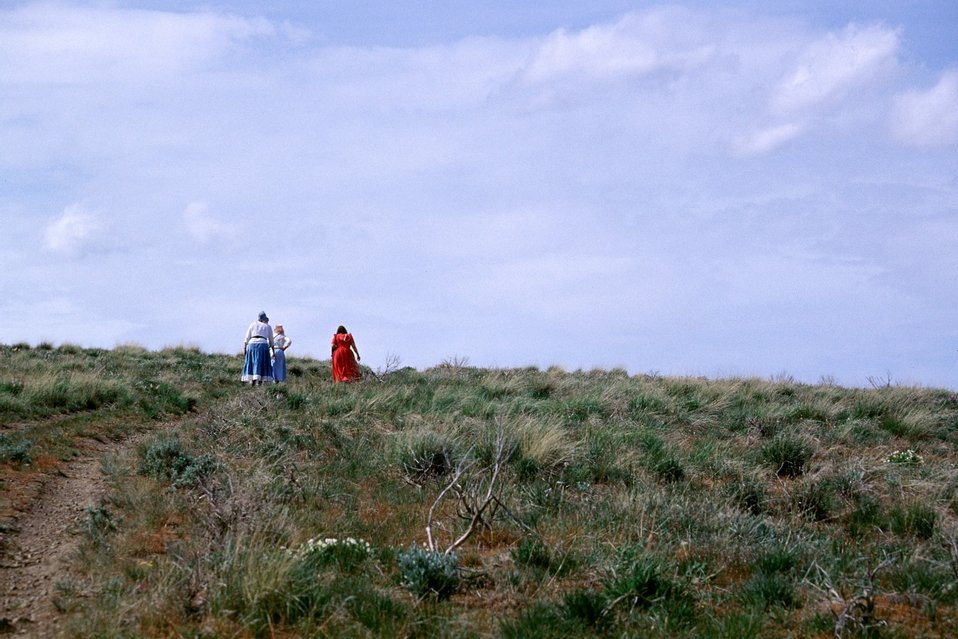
NHOTIC 10th Anniversary, wagon train reenactment. Three pioneer women walking on the Oregon Trail.